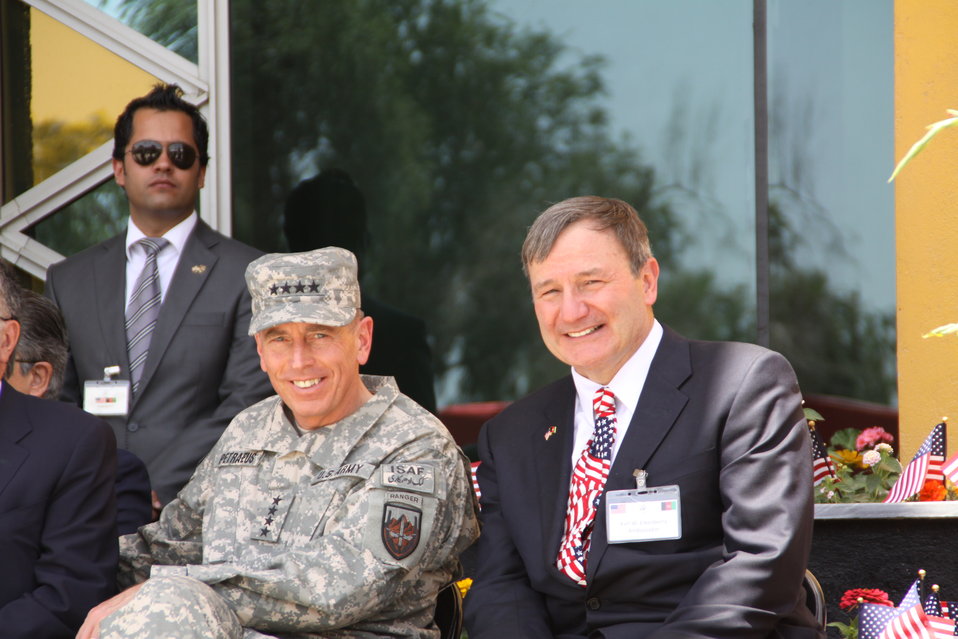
Kabul Official July 4th Celebration